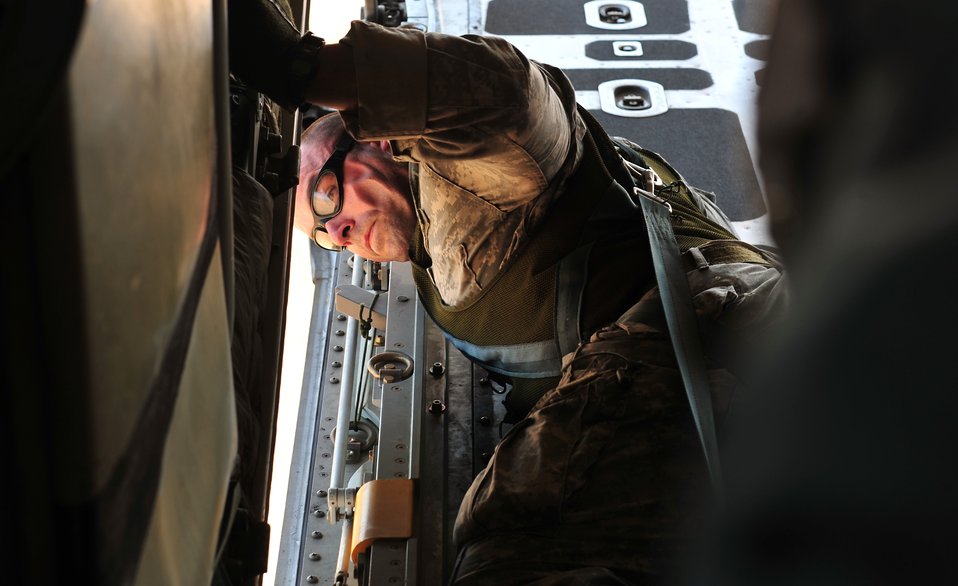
Drop ready

An Airman prepares to drop from an HC-130 King Oct. 16, 2011, at Davis-Monthan Air Force Base, Ariz., during Angel Thunder 2011. Angel Thunder is an Air Combat Command sponsored personnel recovery/combat search and rescue exercise that combines Department of Defense and non-DoD assets.